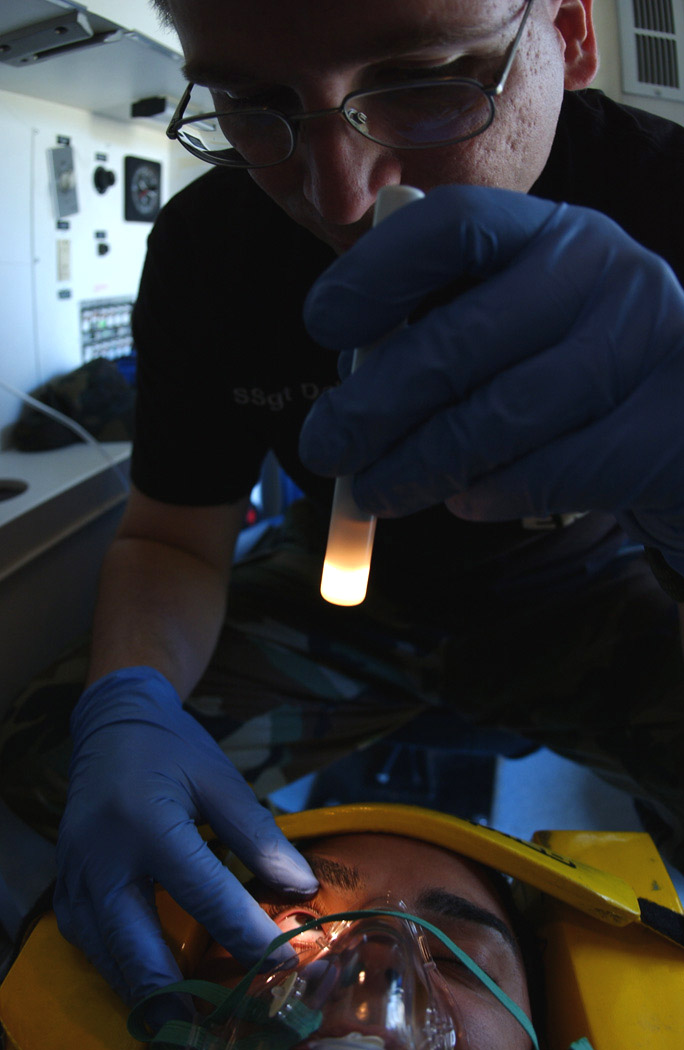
Quick care

EIELSON AIR FORCE BASE, Alaska -- Staff Sgt. Robert Daly studies Senior Airman Derek Uburtis' eyes for discoloration, unequal pupils, foreign bodies or blood in the anterior chamber of the eye during a training exercise here. They are assigned to the 354th Medical Group.